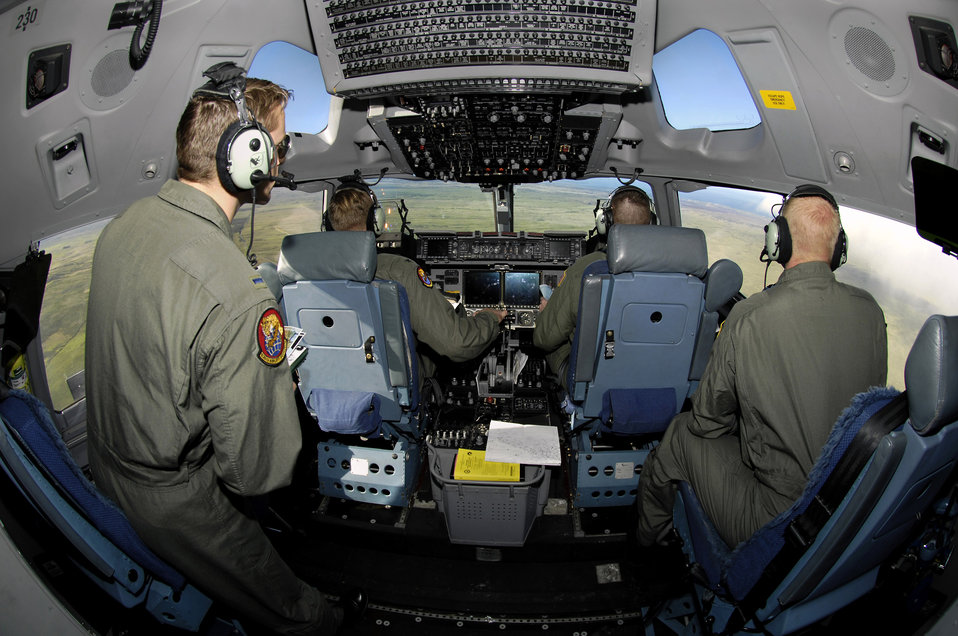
C-17 Route Certification

C-17 Globemaster III aircrew members validate radar coverage Jan. 3 during a low-level flying route over the island of Hawaii. The Airmen, from Hickam Air Force Base, Hawaii, fly a local area training mission. In combat, pilots will operate aircraft at altitudes as low as 100 feet and at high airspeeds to defeat ground missile radars and avoid sophisticated surface-to-air missiles, anti-aircraft artillery and enemy fighters. High speed low-altitude training activities are conducted only in limited, charted airspace.